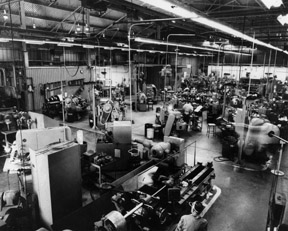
Much of the intricate scientific and technical equipment needed to implement Battelle-Northwest's extensive research and development program is fabricated in this specially-equipped machine shop at Pacific Northwest Laboratory, Richland, Washington. c. 1966